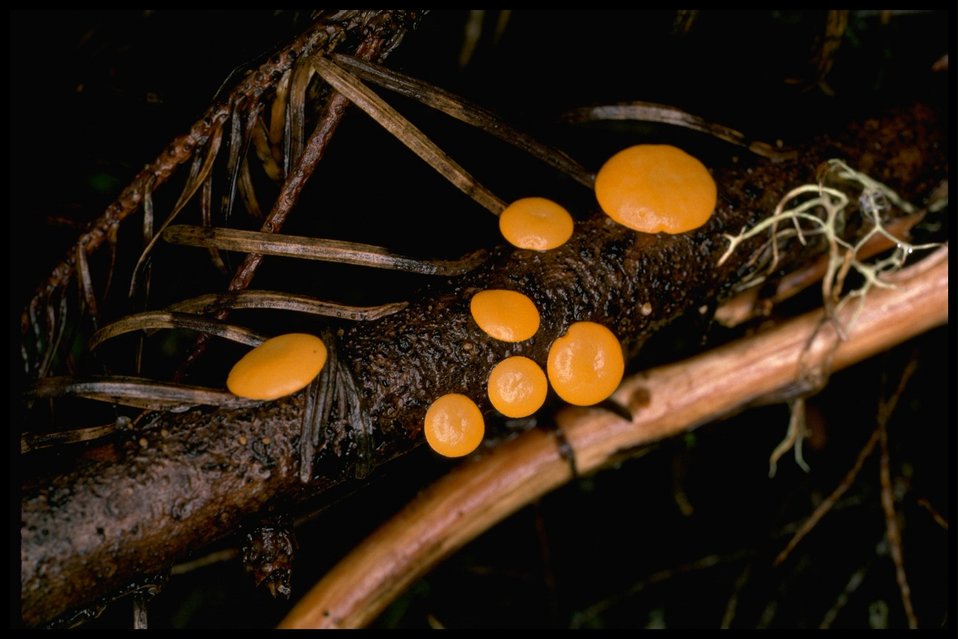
Pithya vulgaris, commonly known as the Pythia.